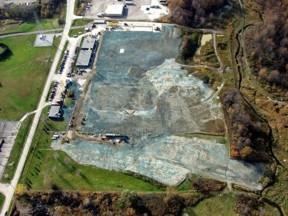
Ashtabula Site

An aerial photo of the Ashtabula Site in 2006, located in Ohio. The Closure Project was completed in 2006 and 42 acres have been returned by DOE to the owner, Reactive Metals Incorporated, for unrestricted industrial reuse.